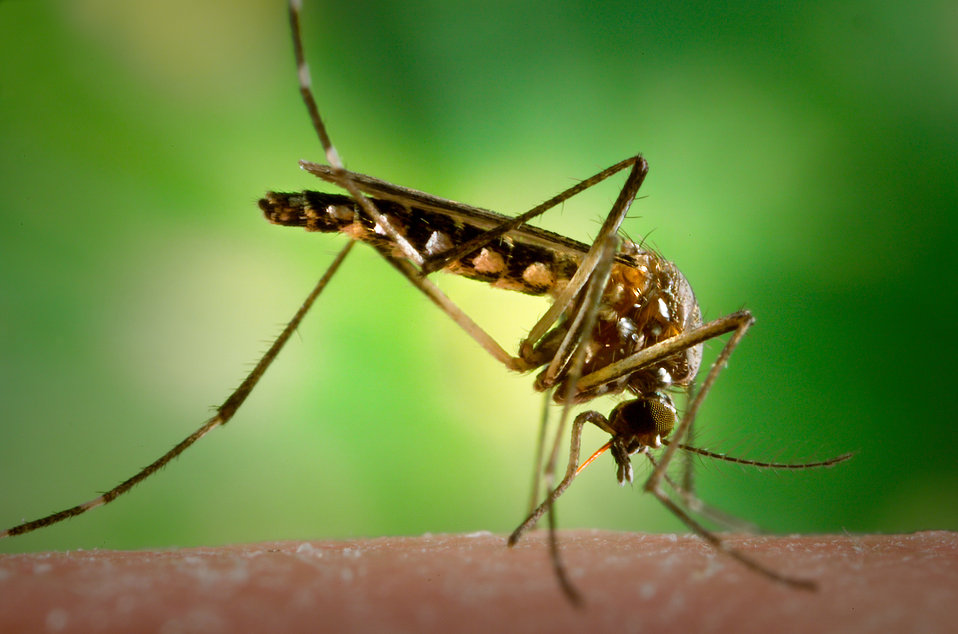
This 2006 photograph depicted a female Aedes aegypti mosquito as she was in the process of acquiring a blood meal from its human host, after having penetrated the skin surface with the sharply-pointed "fascicle". Normally, this female would be obtaining her blood from an unsuspecting host, but in this case, the CDC's biomedical photographer, James Gathany, had volunteered his own hand in order to entice the insect to alight, and feed. As it would fill with blood, the abdomen would become distended, thereby, stretching the exterior exoskeletal surface, thereby, causing it to become transparent, and allowing the collecting blood to become visible as an enlarging red mass. See PHIL # #8923, for this mosquito's appearance in its abdominally-distended state. Note the positioning of the head, and legs, which are closer to the host skin surface, as blood is about to be ingested through the fascicle.